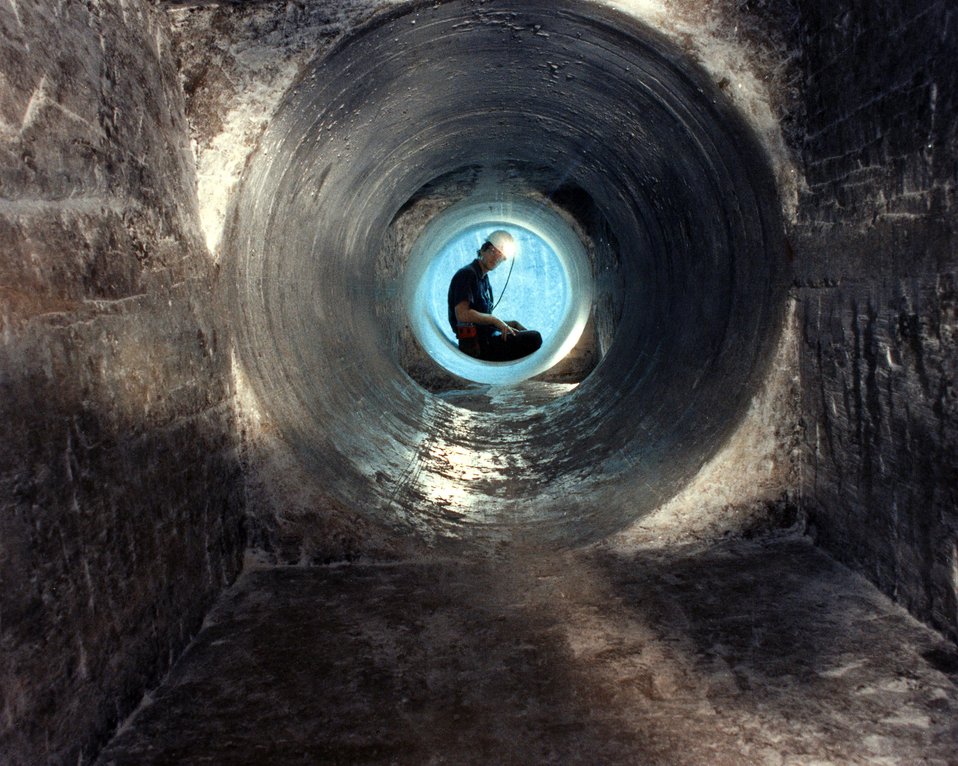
36-INCH DIAMETER HORIZONTAL BOREHOLE AND CUT-AWAY IN WALL OF TEST ROOM D.

THE WASTE ISOLATION PILOT PLANT IS A DOE RESEARCH AND DEVELOPMENT FACILITY FOR DEMONSTRATING THE SAFE DISPOSAL OF TRANSURANIC RADIOACTIVE WASTES. TEST SHAFTS HAVE BEEN DRILLED TO A DEPTH OF 2,100 FEET. THE SHAFTS, ONE 6 FEET IN DIAMETER AND THE OTHER 12 FEET IN DIAMETER, PROVIDE AN ENTRY PASSAGE AND VENTILATION TO THE UNDERGROUND SALT ROCK FORMATION THAT IS BEING TESTED TO DETERMINE ITS SUITABILITY FOR RADIOACTIVE WASTE STORAGE. THIS BOREHOLE AND CUT AWAY WAS DRILLED FOR INSTALLATION OF SMALL SCALE SEAL PERFORMANCE TEST.